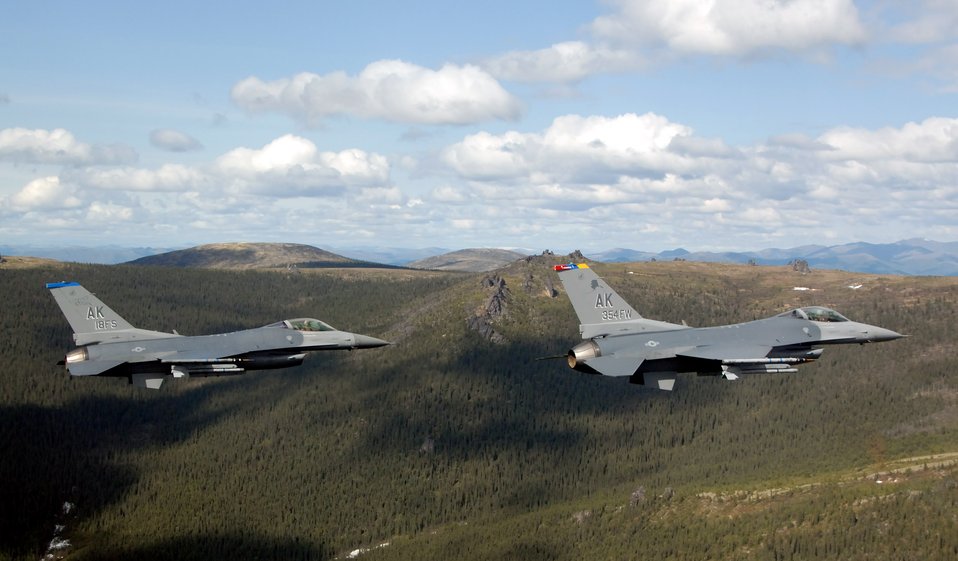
Final flight for fighters

Two F-16 Fighting Falcons from the 18th Fighter Squadron fly May 29 over the Pacific Alaska Range Complex in Alaska. The aircraft assigned to Eielson Air Force Base, Alaska, flew in formation for the last time due to the deactivation of the 18th and 355th Fighter Squadrons.